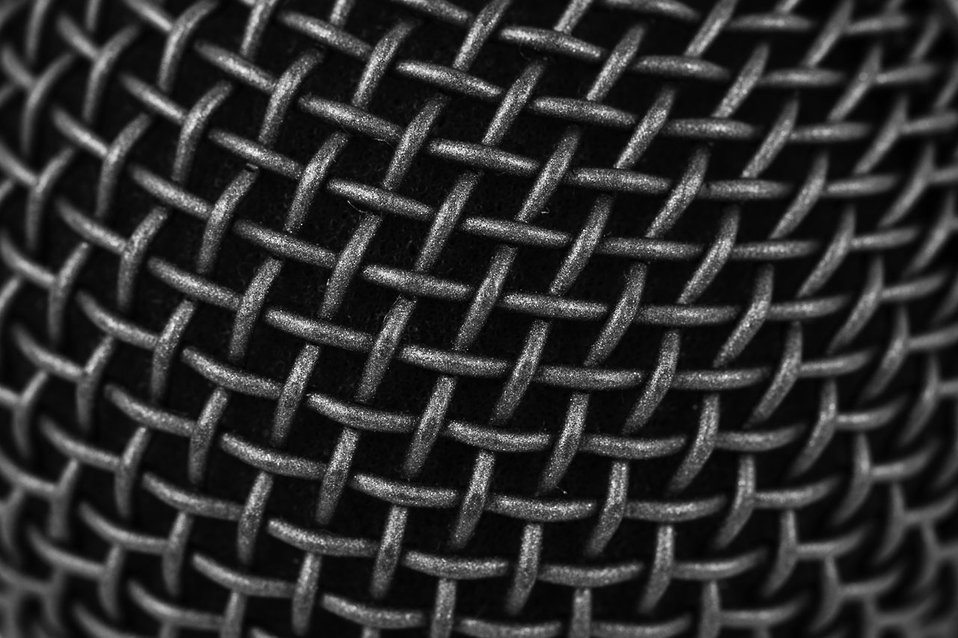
Abstract grid background

Closeup picture of a microphone.